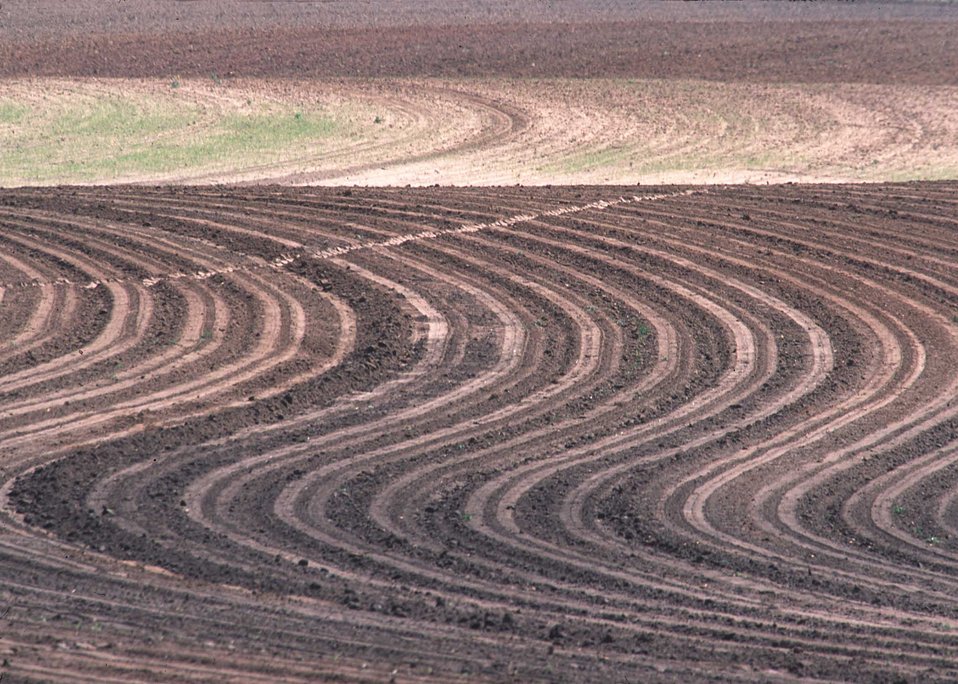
Contour farming and terraces, Tombs, County, Georgia.